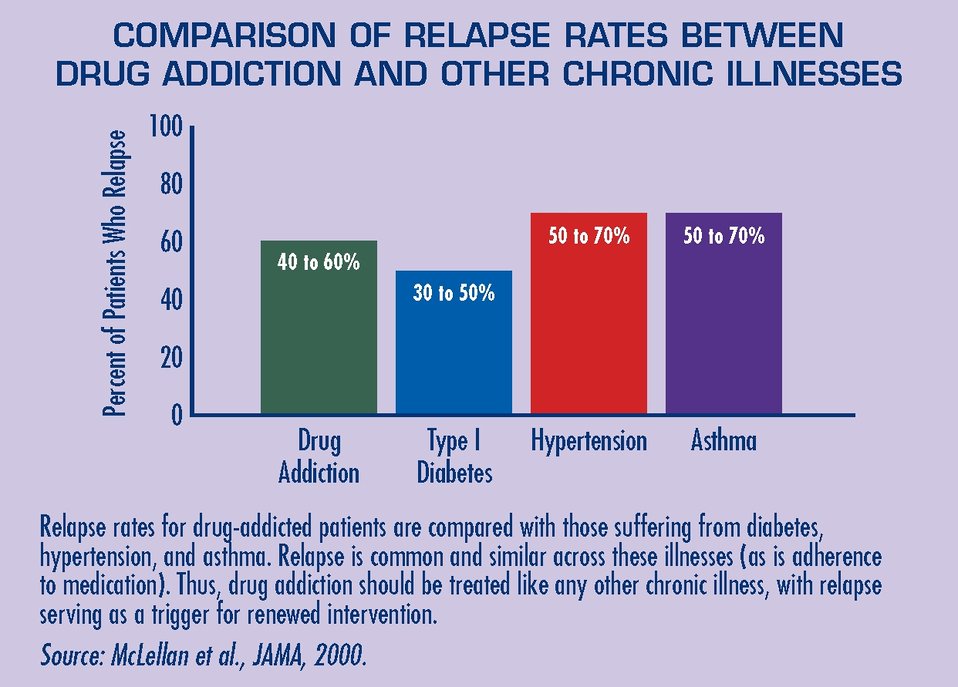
Relapse-Rates-Comparison